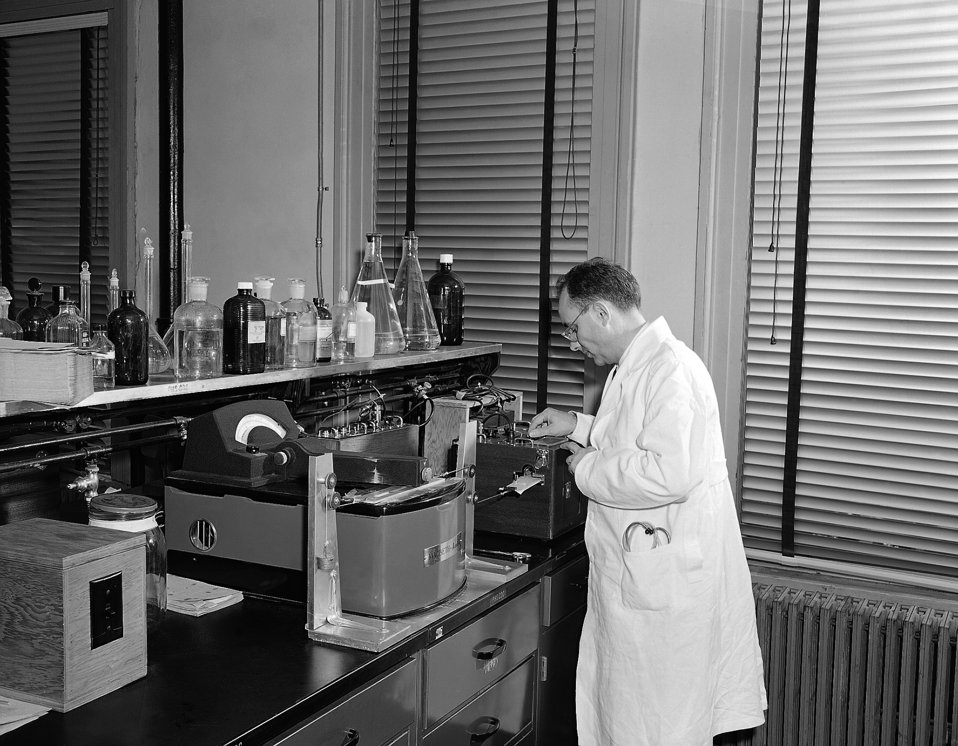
This historic image depicted Gerald R. Cooper, MD, PhD, as he was using the automatic scanning and recording equipment for the paper electrophoresis machine.